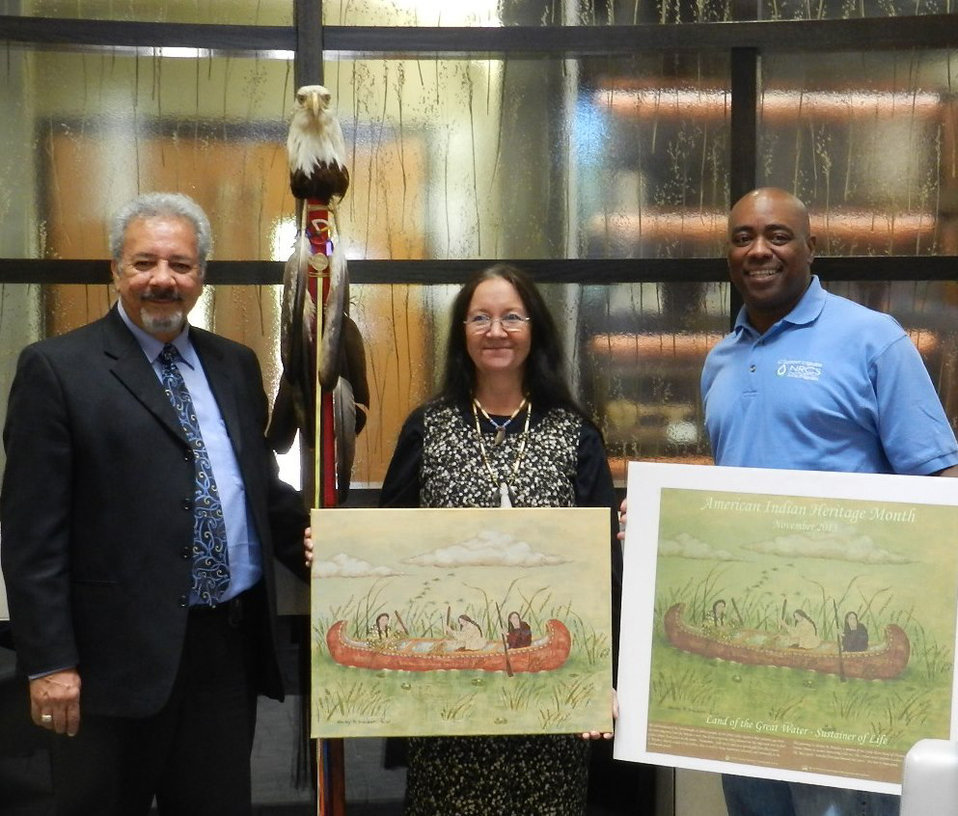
NativeAmMonth1

Little River Band of Ottawa Indians Ogema member Larry Romanelli (left) and U.S. Department of Agriculture (USDA) Natural Resources Conservation Service (NRCS) Michigan State Conservationist Garry Lee (right) pose the winner of USDA's NRCS Native American Heritage Month poster contest artist Shirley M. Brauker.